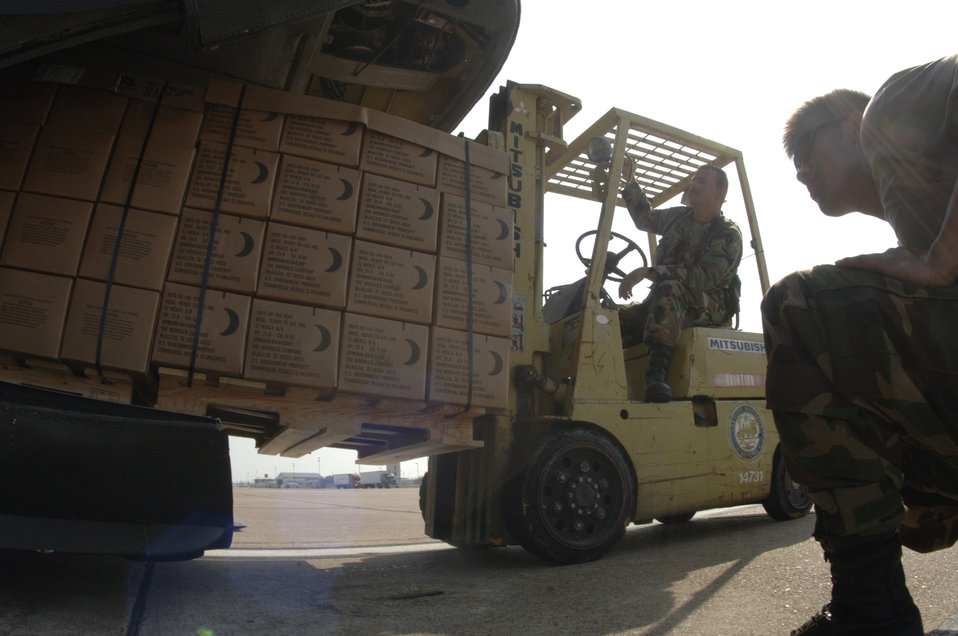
Meals Ready to Eat

ELLINGTON FIELD, Texas - Staff Sgt. Steve Smith operates a forklift to load pallets of meals ready to eat into a CH-47 Chinook helicopter here in support of hurricane relief operations. Sergeant Smith is assigned to the 36th Infantry Division from Austin, Texas.